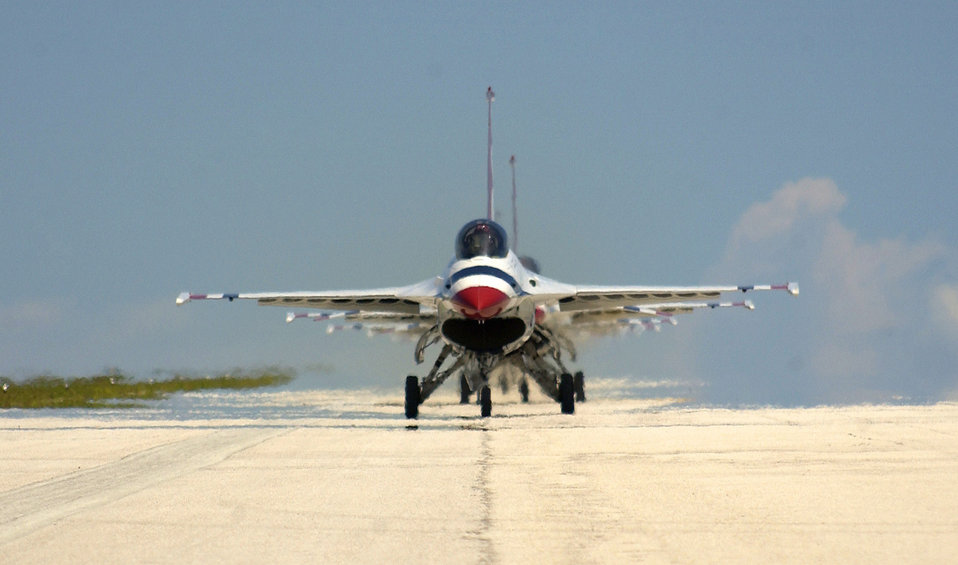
Overdue visit

ANDERSEN AIR FORCE BASE, Guam - The U.S. Air Force Thunderbirds taxi down the flightline after landing here Sept. 9. This is the first time in a decade the USAF Thunderbirds demonstration team has visited Guam. The Thunderbirds will perform during an air show held Sept. 12.